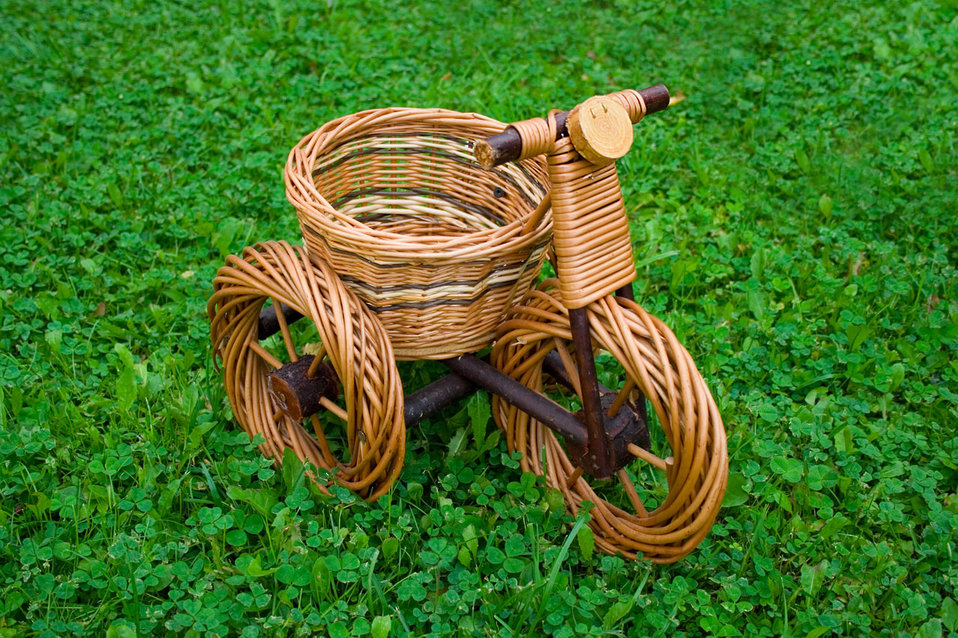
Wicker basket

A wicker basket in a bike shape on the grass.